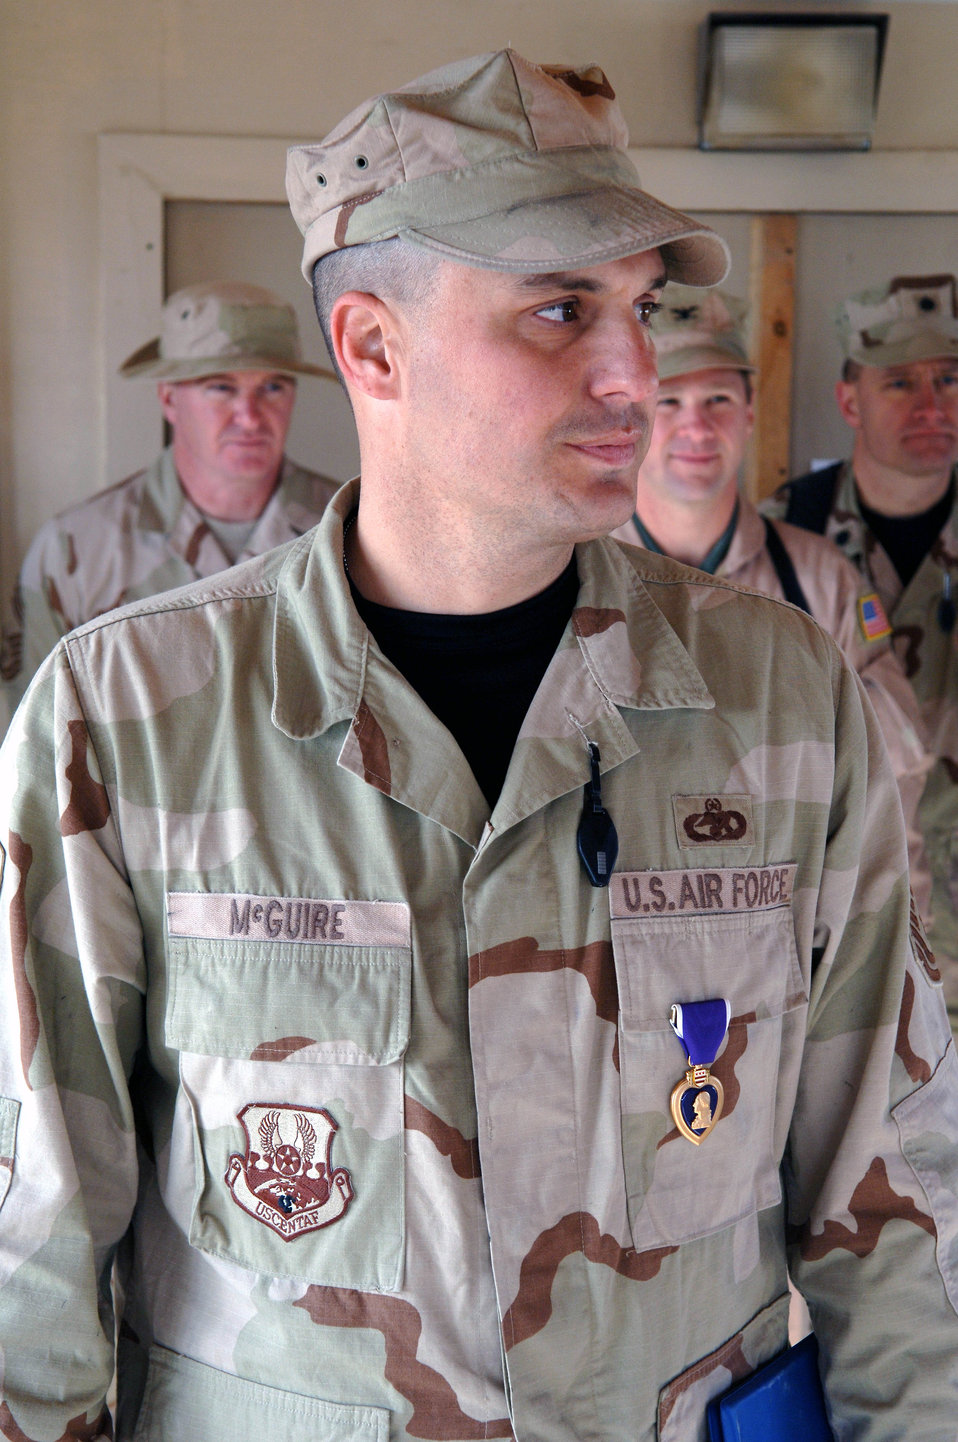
Kandahar Airman receives Purple Heart

Senior Master Sgt. Daniel McGuire was awarded a Purple Heart Medal by Brig. Gen. Christopher Miller during a ceremony Dec. 23 at Kandahar Airfield, Afghanistan. The medal was awarded for injuries sustained during enemy action on a convoy mission outside of Kandahar Airfield. Sergeant McGuire is deployed there from MacDill Air Force Base, Fla., where he is the vehicle operations manager. General Miller is the 455th Air Expeditionary Wing commander at Bagram Air Base, Afghanistan.